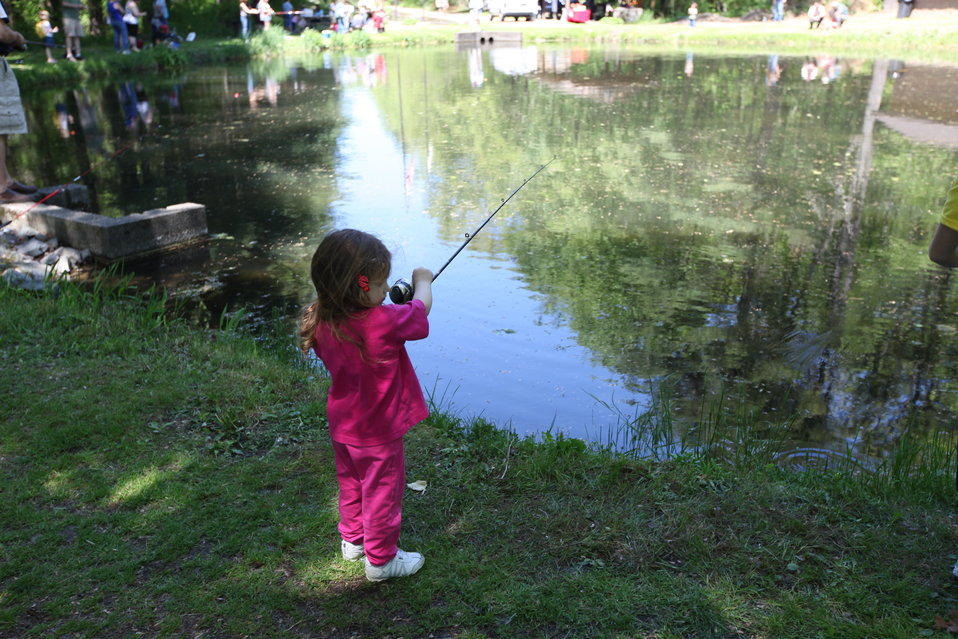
Youth Fishing Derby 2012

Megan Nagel/USFWS